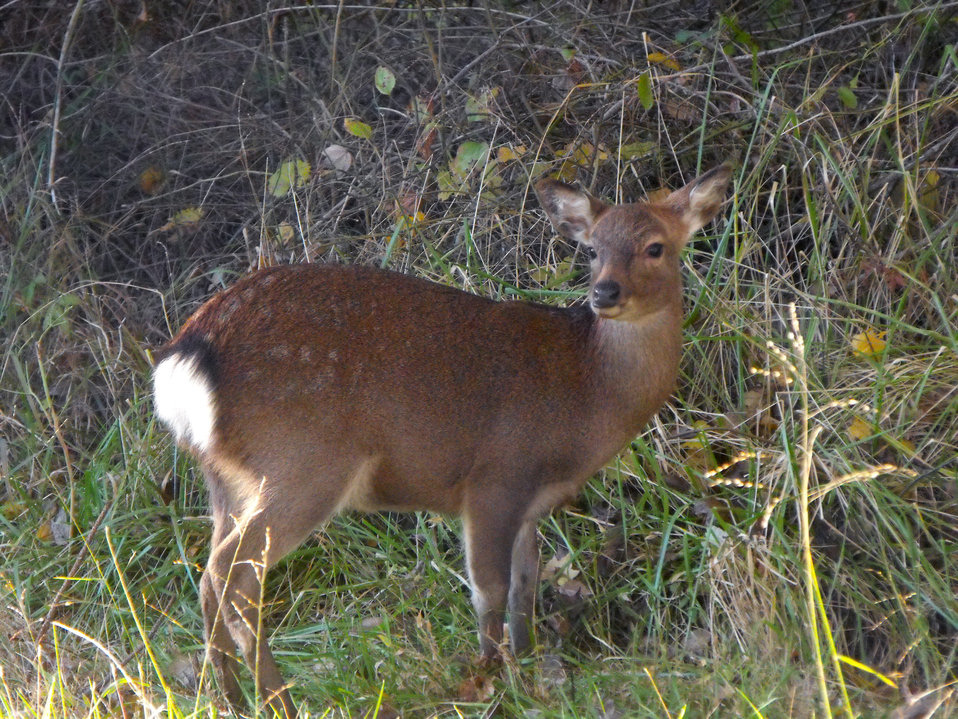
Sika elk

A sika elk off the Wildlife Loop at Chincoteague National Wildlife Refuge.